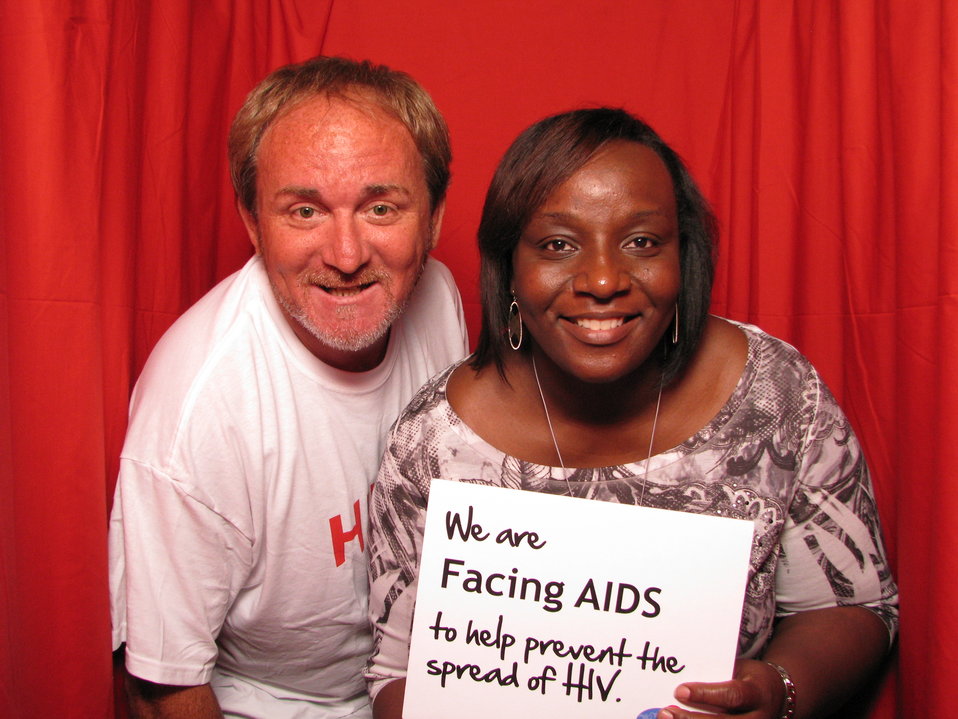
We are FACING AIDS to help prevent the spread of HIV.

From the AIDS.gov photo booth at the U.S. Conference on AIDS, September 2010 (Orlando, FL).